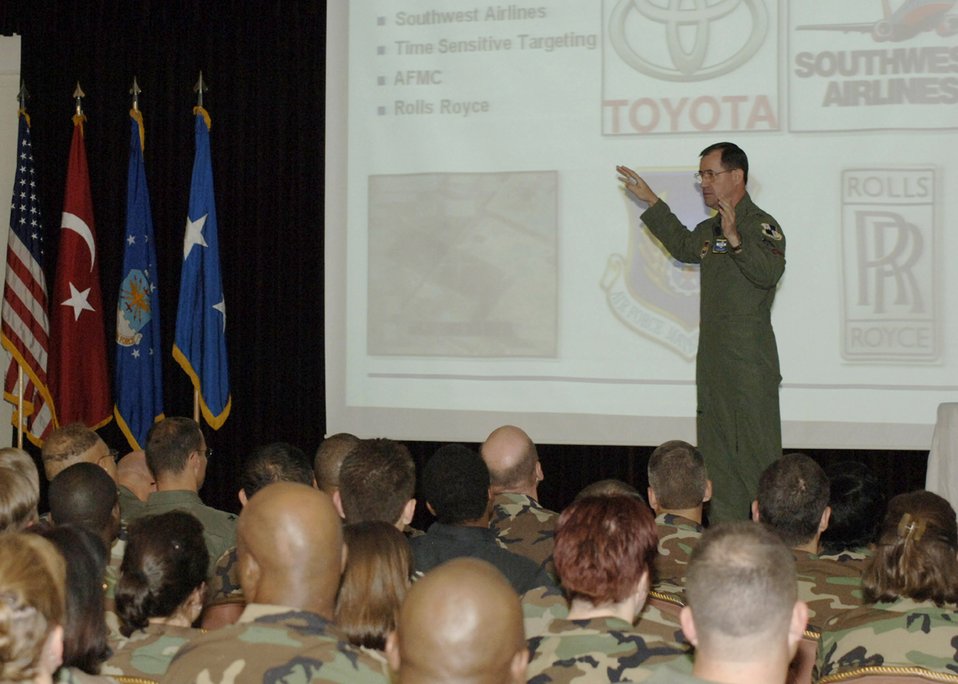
AFSO 21: Leaning toward a brighter future

Senior leaders sit in on a brief given by Maj. Gen. Marc Rogers, U.S. Air Forces in Europe vice commander, May 11 at Incirlik Air Base, Turkey. General Rogers discussed the importance of Air Force Smart Operations for the 21st Century, more commonly referred to as AFSO21. The